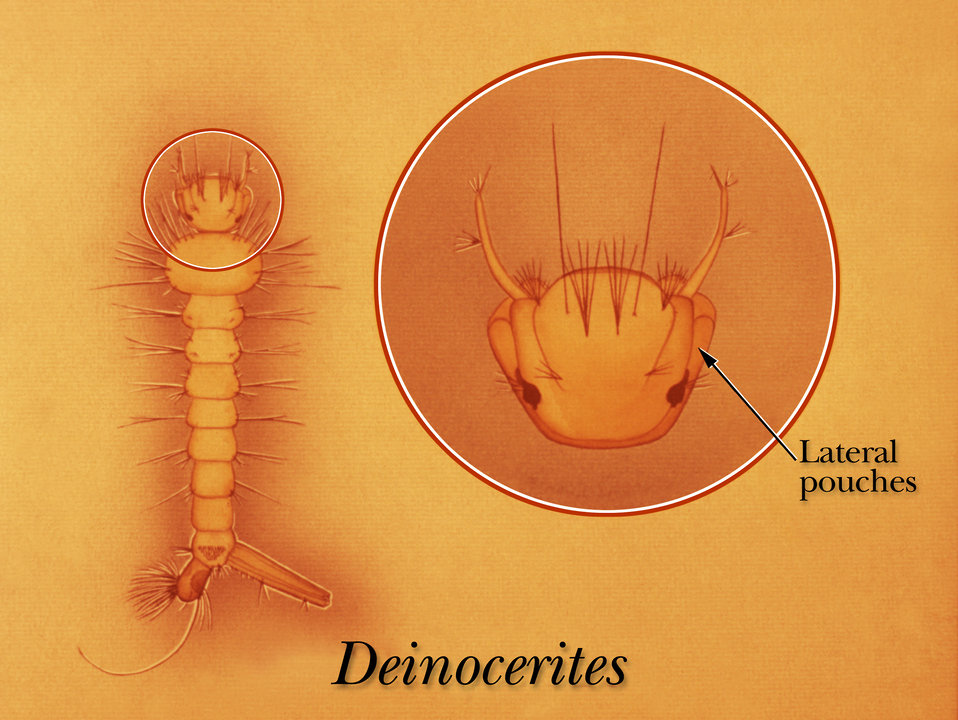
An illustration identifying lateral pouches on the head of a Deinocerites mosquito larva.